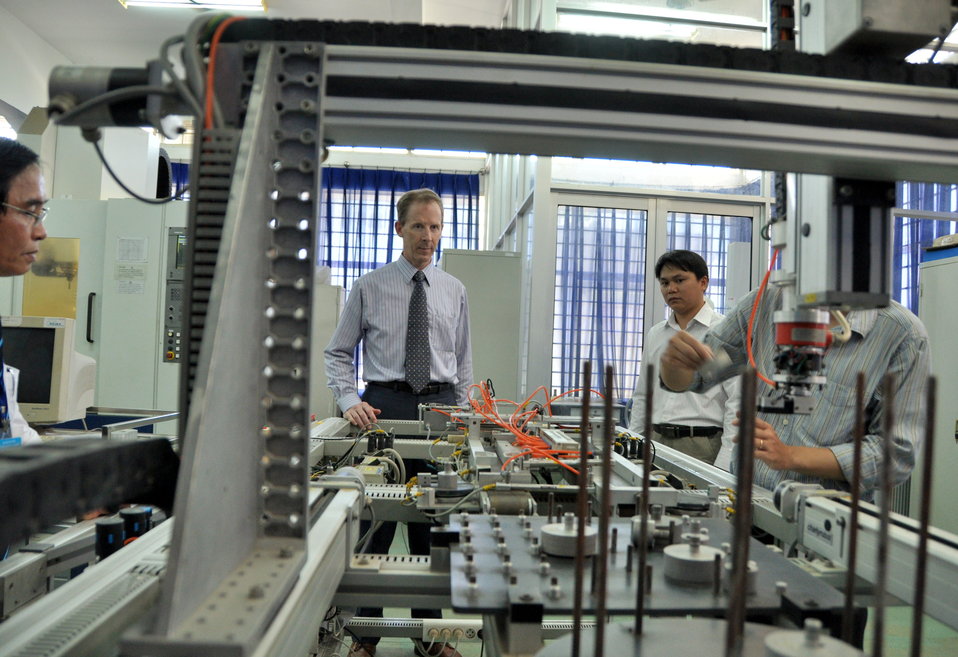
USAID Mission Director visits Danang University of Technology

Danang, July 17, 2013